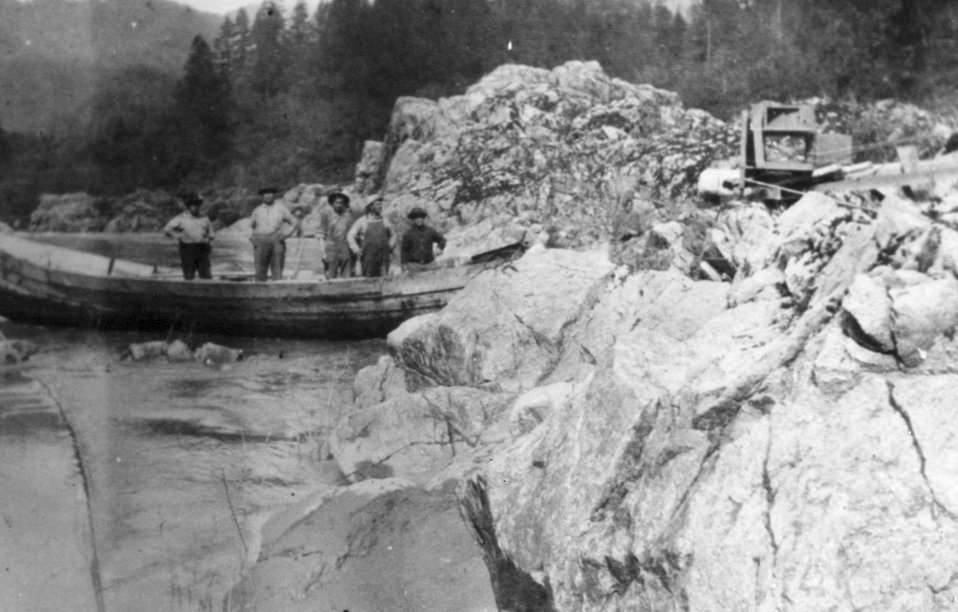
Loading supplies at Blossom Bar.